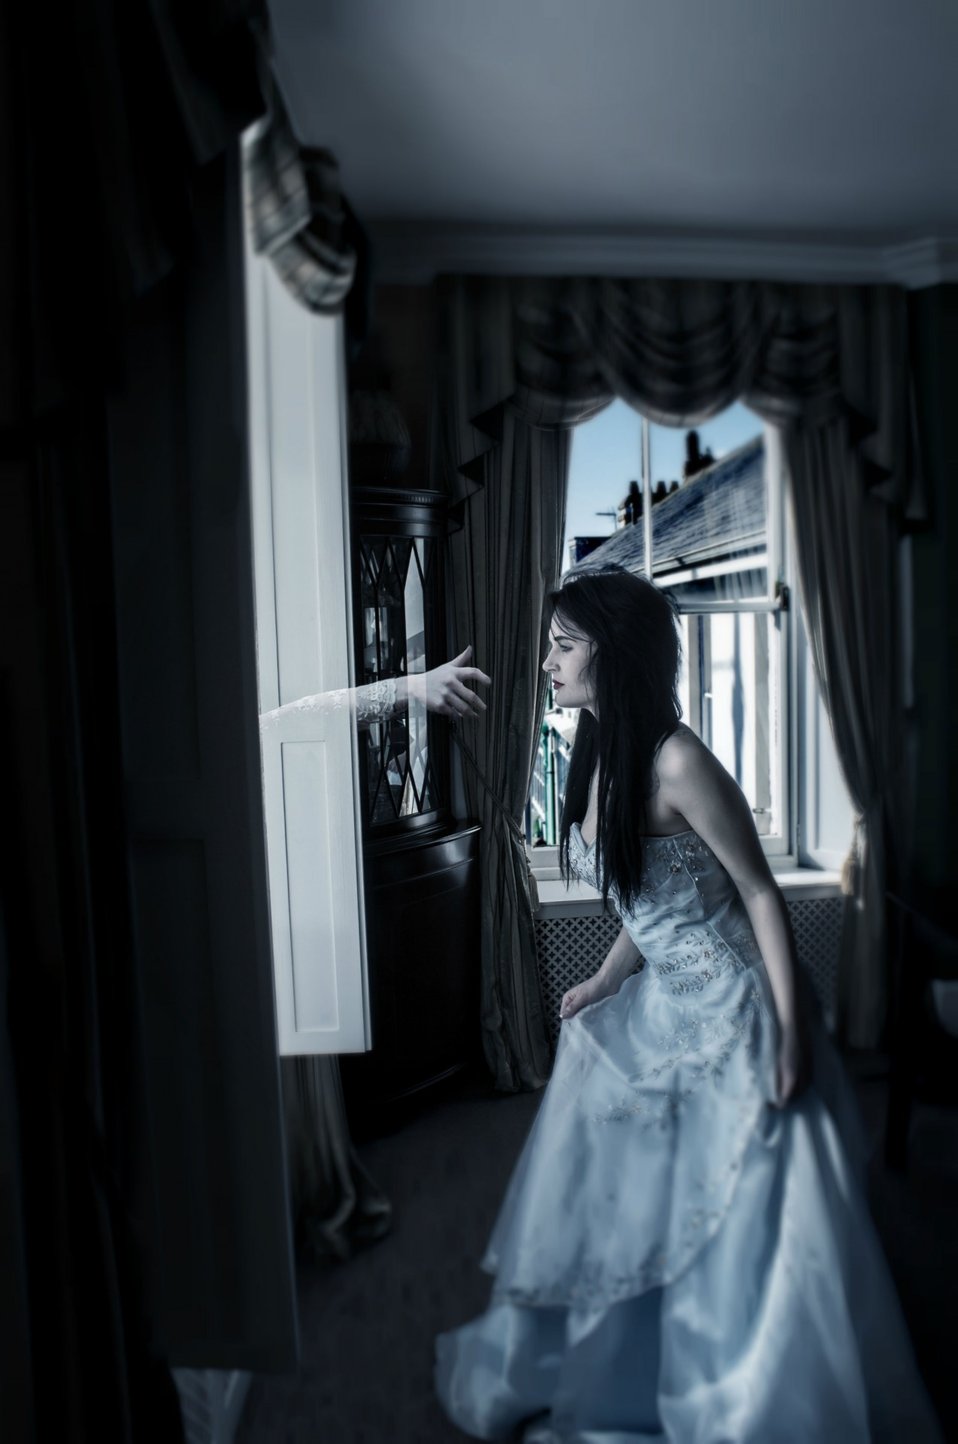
Floating angels

Standing at the gateway to another world.